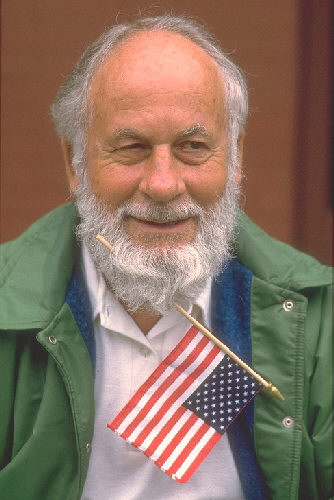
Man with flag in beard.